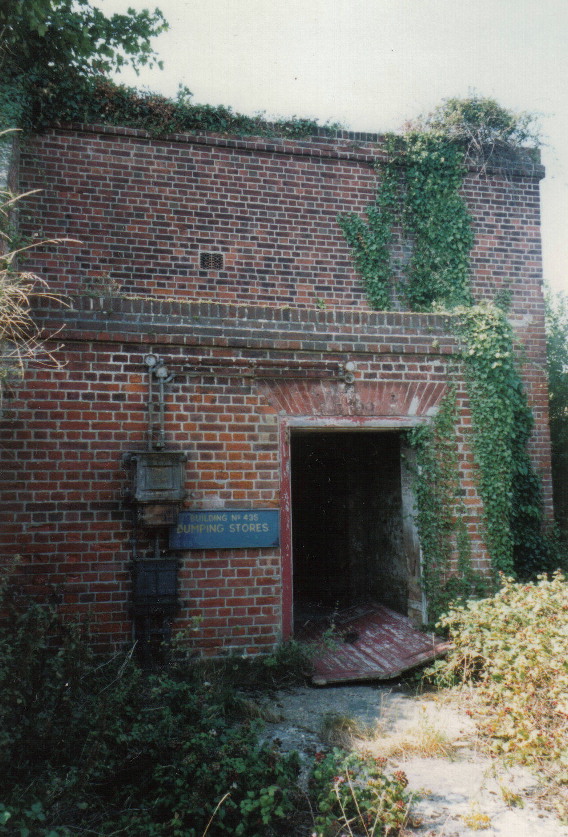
C Powder Magazine at Priddy's Hard.